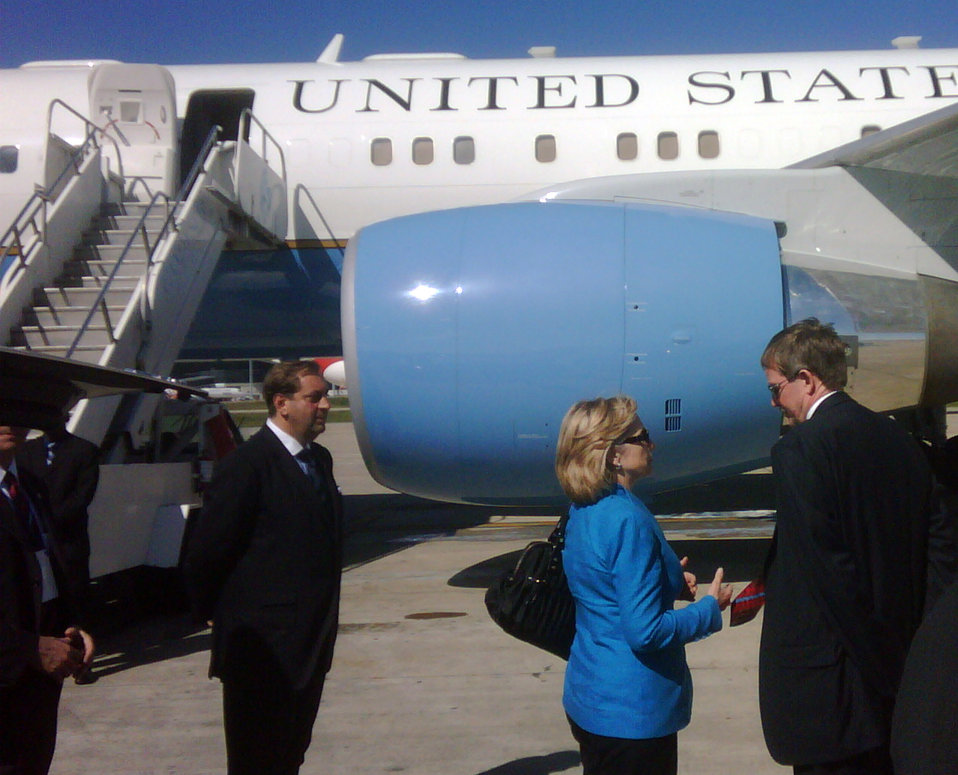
Secretary Clinton Departs Uruguay

U.S. Secretary of State Hillary Rodham Clinton shares remarks with U.S. Ambassador to Uruguay David Nelson in Montevideo, Uruguay before leaving for Buenos Aries, Argentina March 1, 2010.